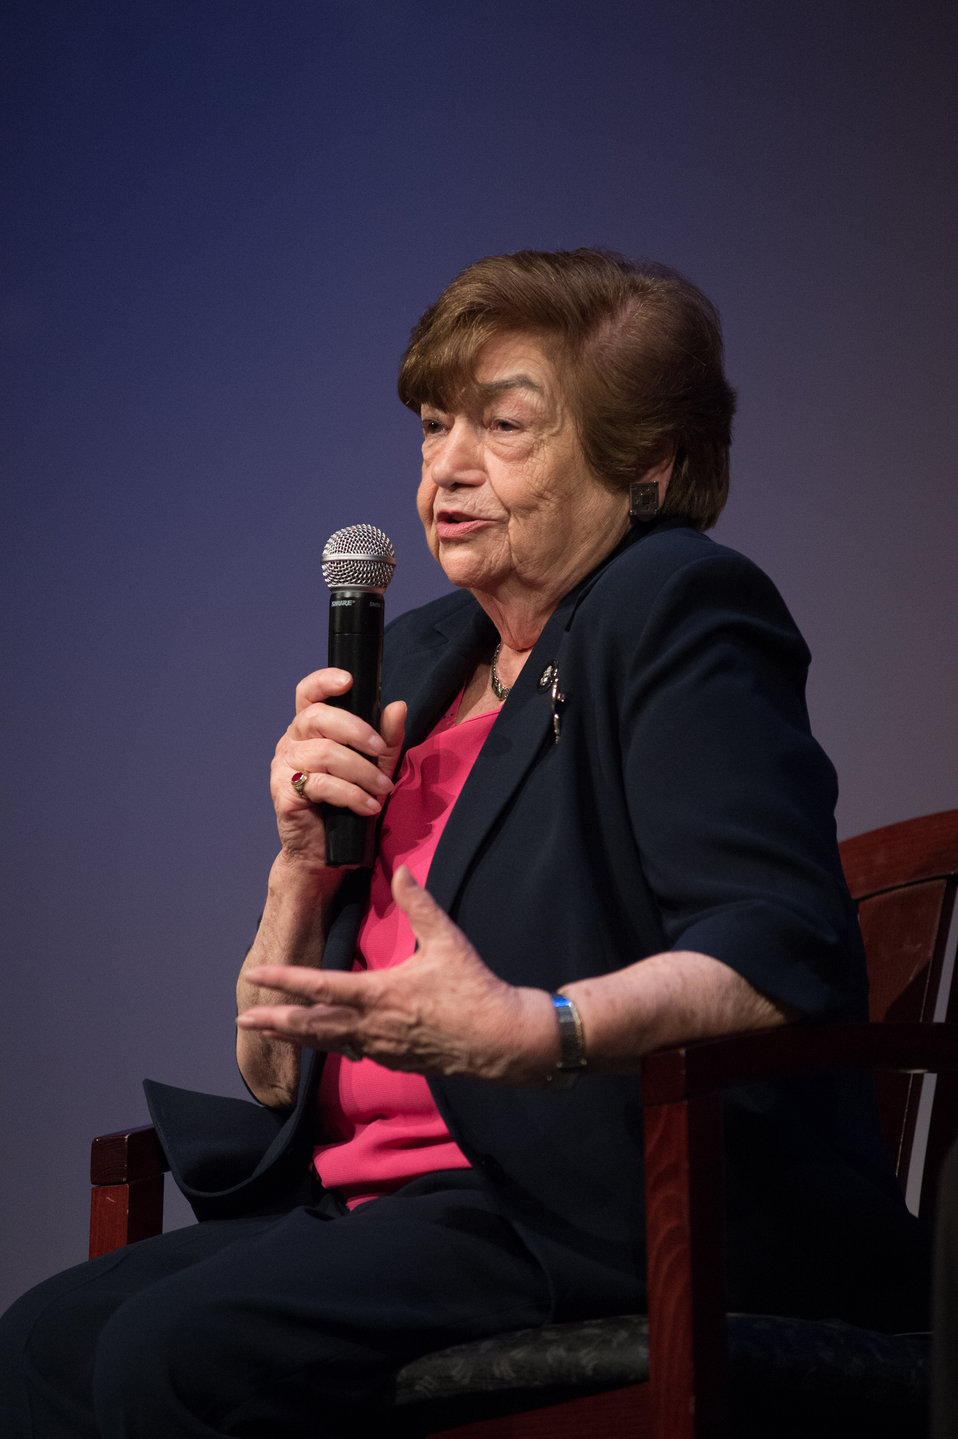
Theresienstadt Concentration Camp Czech Jewish Holocaust Survivor Ela Stein-Weissberger spoke during the 2013 Federal Inter-Agency Holocaust Remembrance Day, at the Lincoln Theater, on Wednesday, April 17, 2013, in Washington, D.C. Ms. Stein-Weissberger talks about her experience of ‘The Night of Broken Glass’, when the Nazi smashed the Stein home. During her imprisonment at Theresienstadt Concentration Camp, she took part in a children’s play ‘Brundibar’ that was part of a German SS propaganda film that showed a model of camp conditions and activities. The film was never released by the German government, but did survive the war. She was shown in the cast, when it was used in the CBS News program – 60 Minutes – ‘The Nazi Deception.’ She also displayed her cloth ‘Jude’ badge that identified her as being Jewish during the Nazi uprising. Since the 1979 President’s Commission on the Holocaust, an annual proclamation signed by the President of the United States recognizes the importance of remembering the atrocities of the Holocaust that should never be forgotten or be ignored.